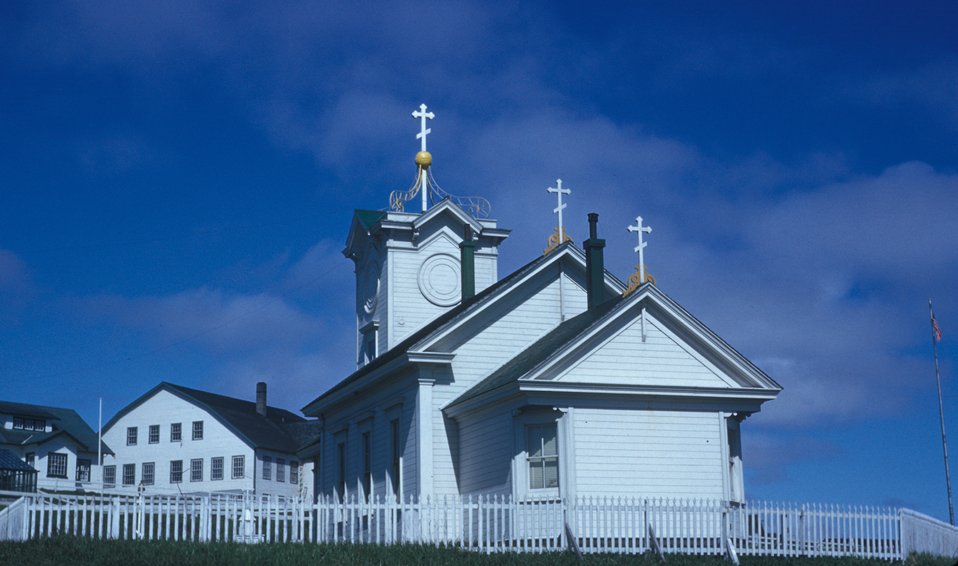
The Russian Orthodox Church at St. Paul without the dome.